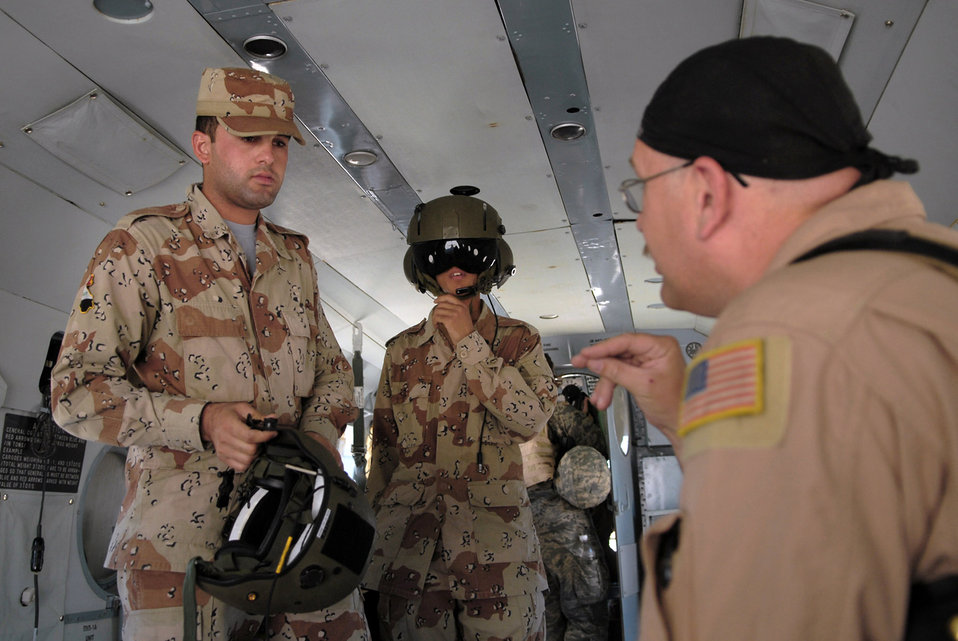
Airmen help Iraqi air force become self-sustaining service

Master Sgt. Bradley Martens gives last-minute instructions to Iraqi air force aerial gunner trainees before a mission May 29 over Camp Taji, Iraq. Sergeant Martens is the 770th Air Expeditionary Advisory Squadron lead aerial gunner training instructor deployed from Hurlburt Field, Fla.